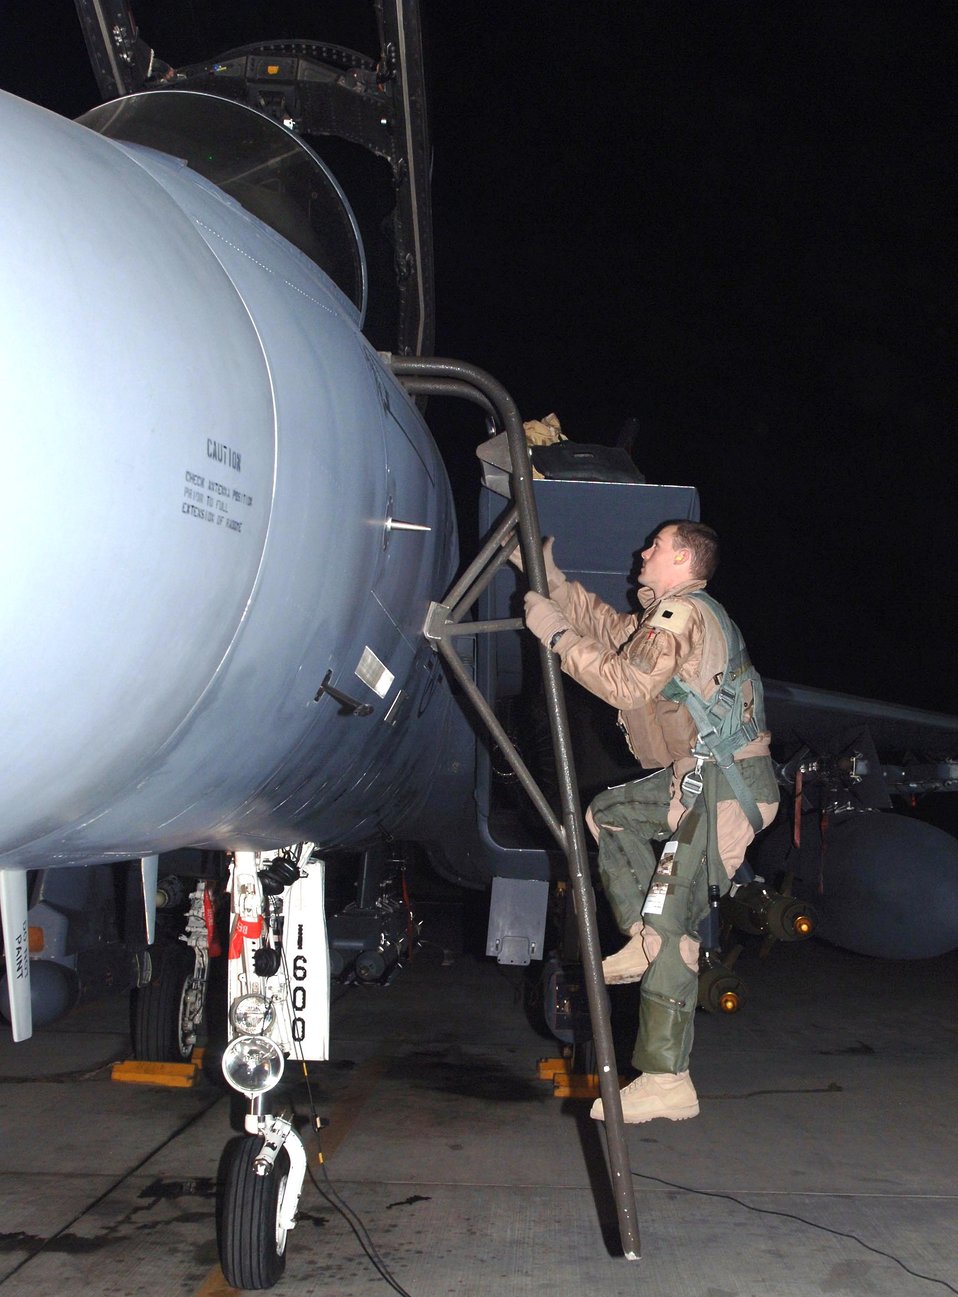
March 8 airpower summary

First Lt. Reid Sanborn climbs into the cockpit of an F-15E Strike Eagle before taking off under cover of darkness in Afghanistan this week. The F-15E has been instrumental in providing close-air support for coalition ground forces in the war on terrorism and more recently in Operation Achilles, an offensive launched this week by the International Security Assistance Force.